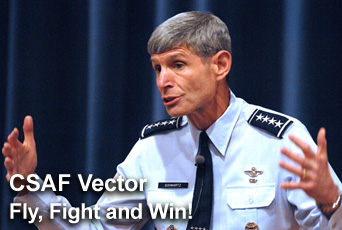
General Schwartz sends out first 'Vector'

The newest CSAF's Vector focuses on the Air Force's responsibility to fly, fight and win.